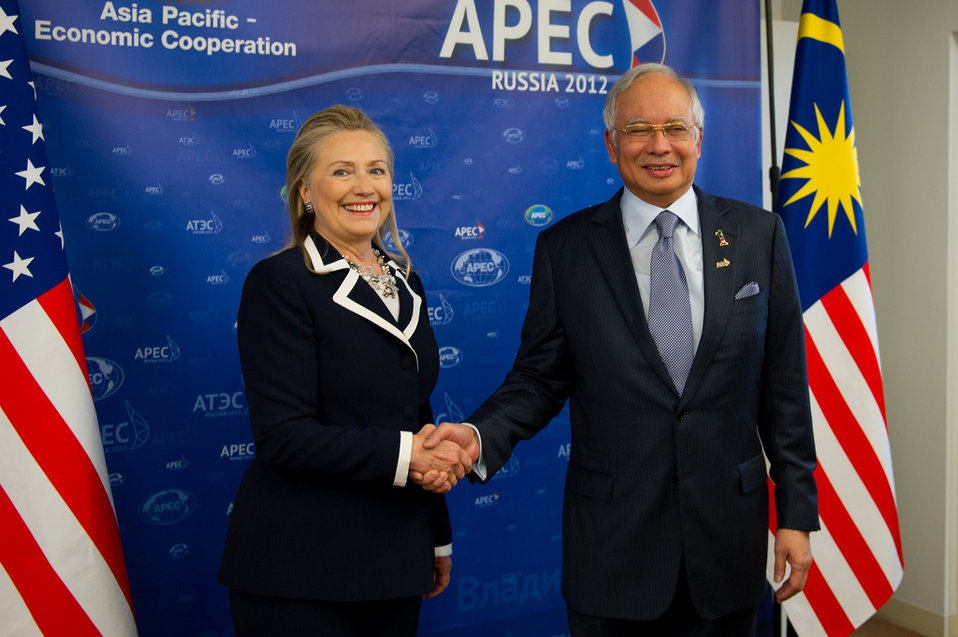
Secretary Clinton Meets With Malaysian Prime Minister Najib Razak

U.S. Secretary of State Hillary Rodham Clinton shakes hands with Malaysian Prime Minister Najib Razak before their meeting during the Asia-Pacific Economic Cooperation (APEC) Leaders' Week in Vladivostok, Russia, September 9, 2012.